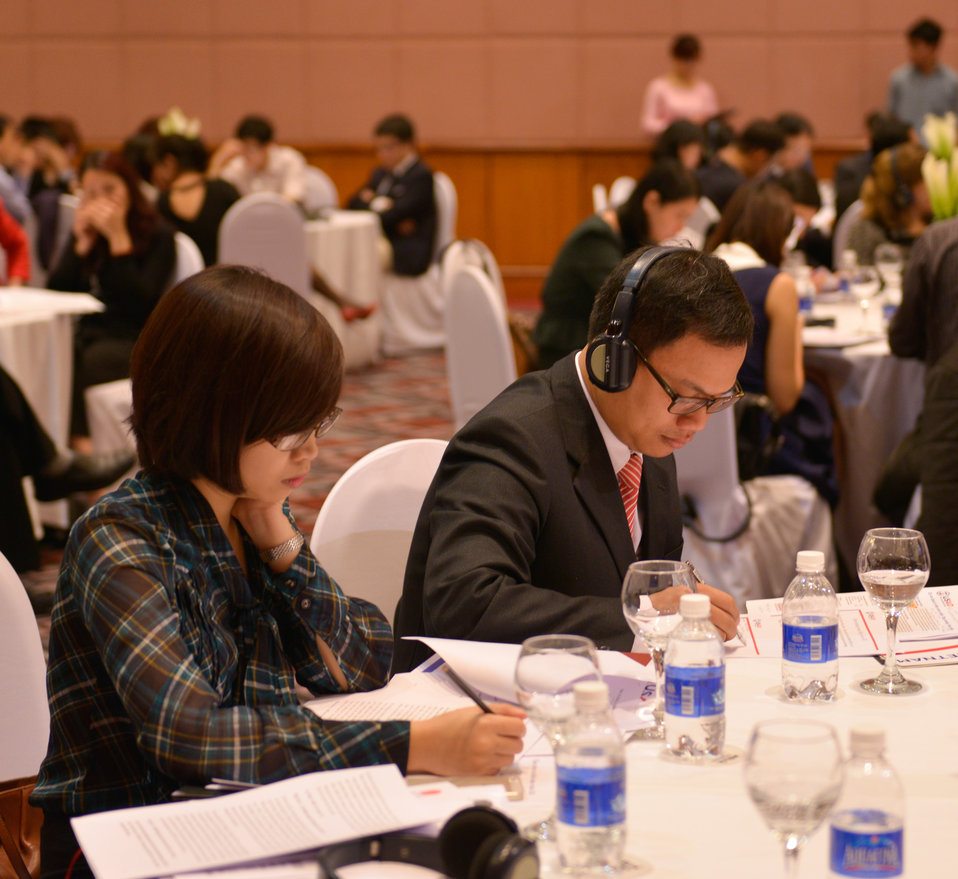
Strategic Kick-off of Governance for Inclusive Growth Program

Hanoi, April 8, 2014.